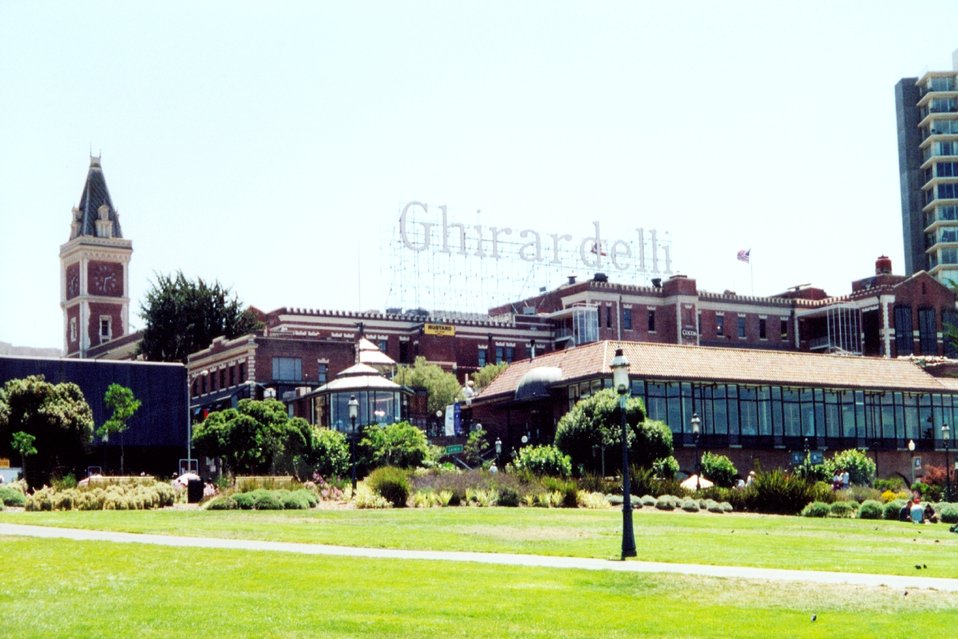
Ghirardelli Square, home of famous chocolate.